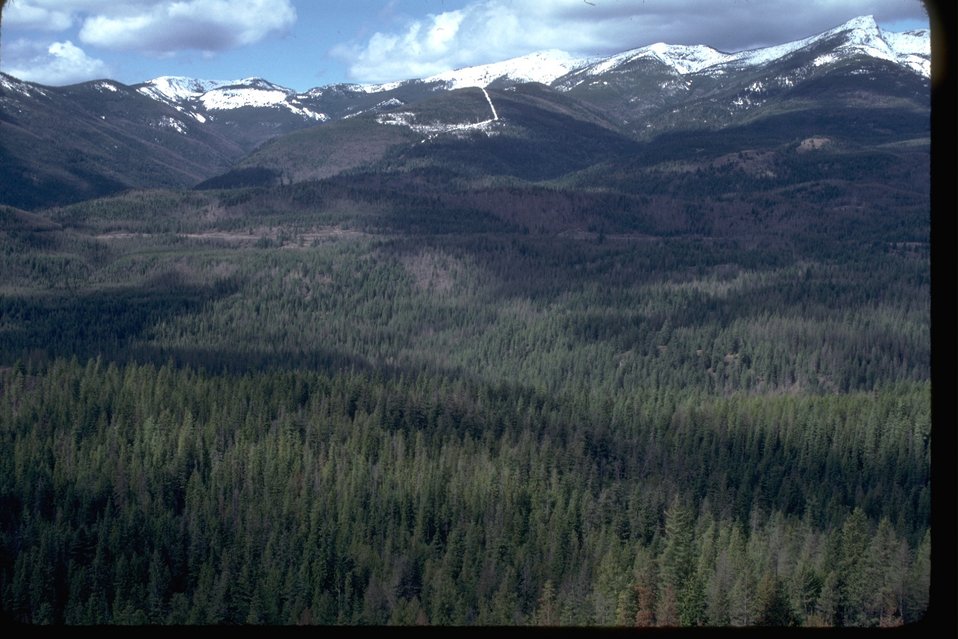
Site of environmental assessment for forest health in Northeast Management Area, Pend Oreille County, Washington.